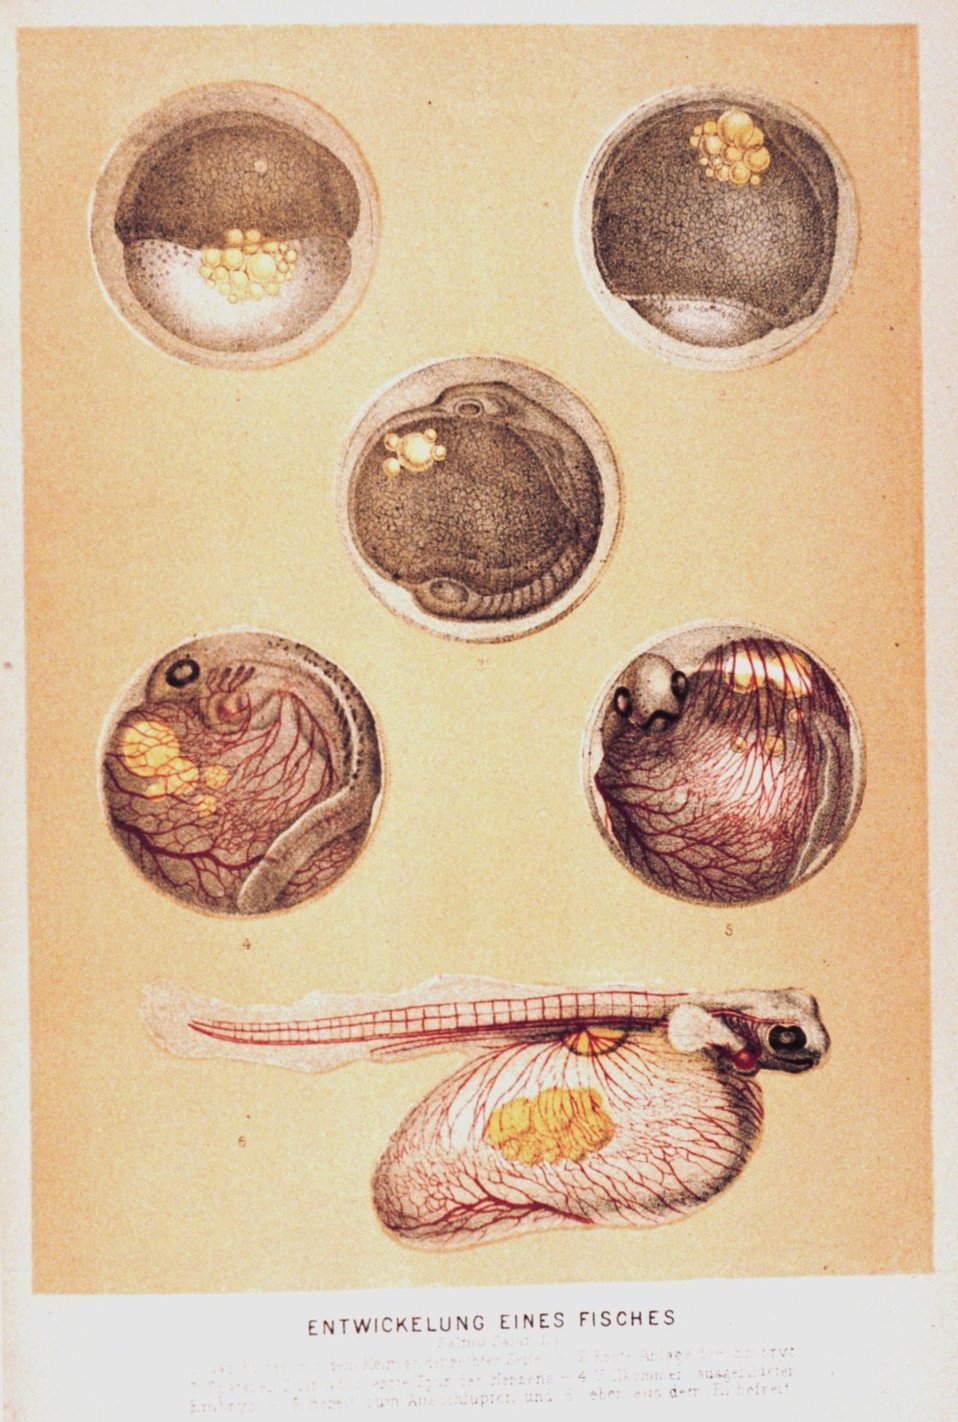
'Entwickelung eines Fisches'. Fish embryo. In: 'Das Meer' by M. J. Schleiden, 1804-1881. P. 538. Library Call Number QH91.S23 1888.